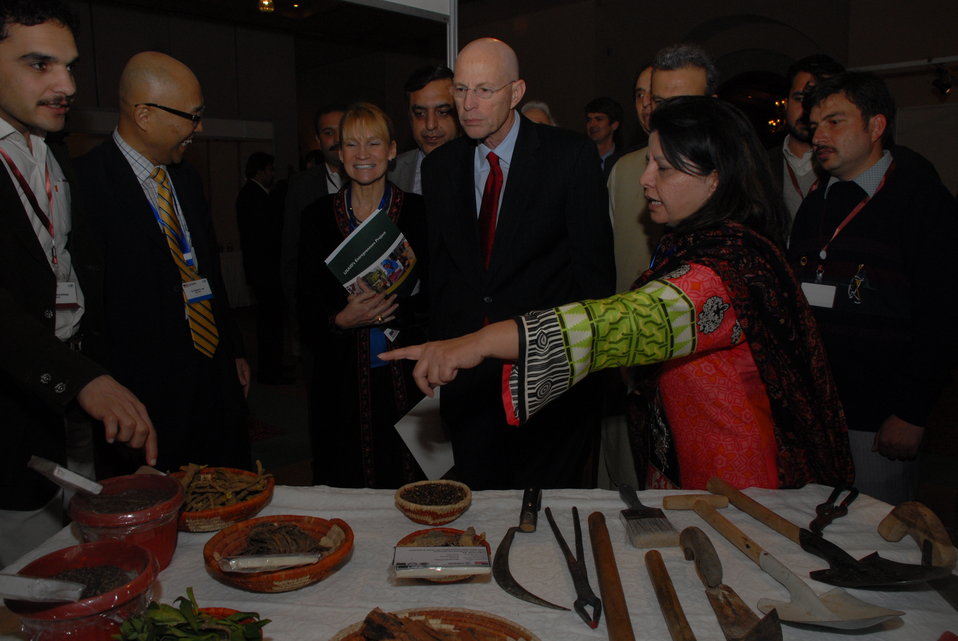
The United States Helps Revitalize Medicinal Plants and Honey Industry in Khyber Pakhtunkhwa 03

The United States, through the U.S. Agency for International Development’s (USAID) Entrepreneurs Project, has trained 24,000 small business owners in the field of medicinal plants and honey. The Medicinal and Aromatic Plants and Honey Industry conference on February 3 featured discussions aimed at developing the medicinal plant and honey sector in Pakistan. Plant collectors and bee-keepers discussed business opportunities with buyers and service providers.